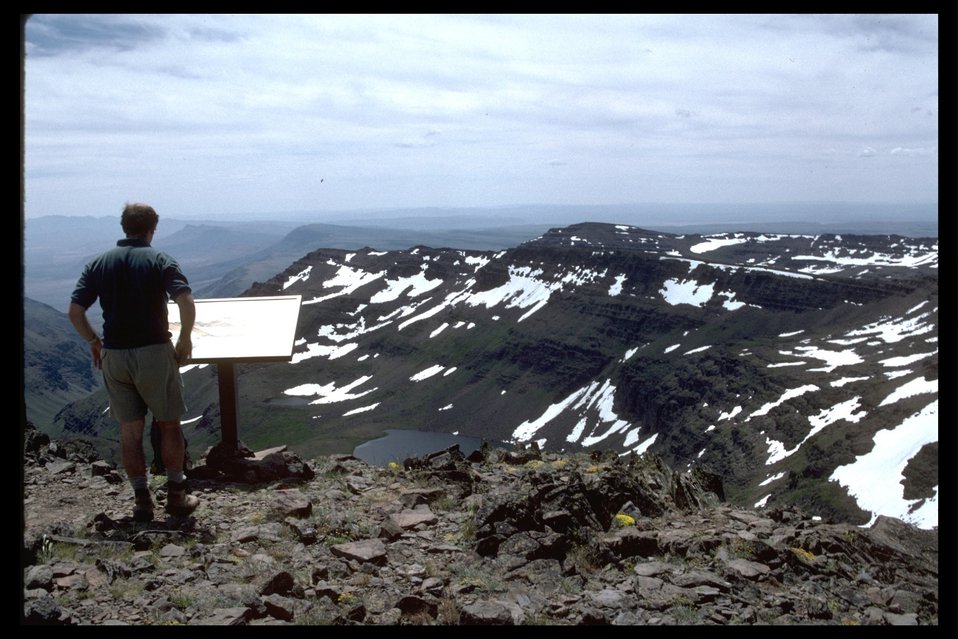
High Steens interpretive sign overlooking Wild Horse Lake. (WSA 2-85F)